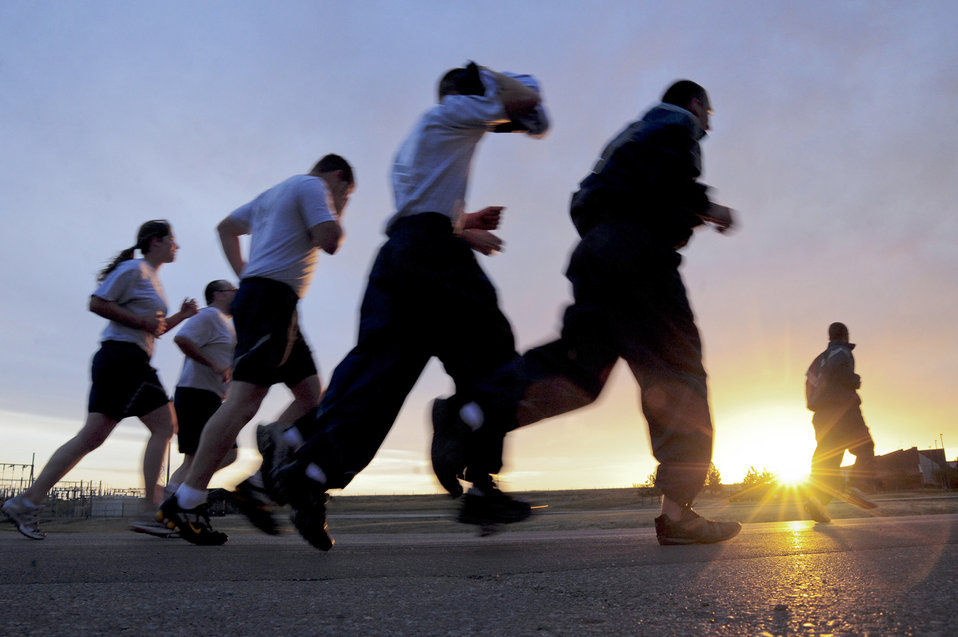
Leap into Fitness

DOD military and civilian members are encouraged to participate in the presidential fitness challenge this fall.